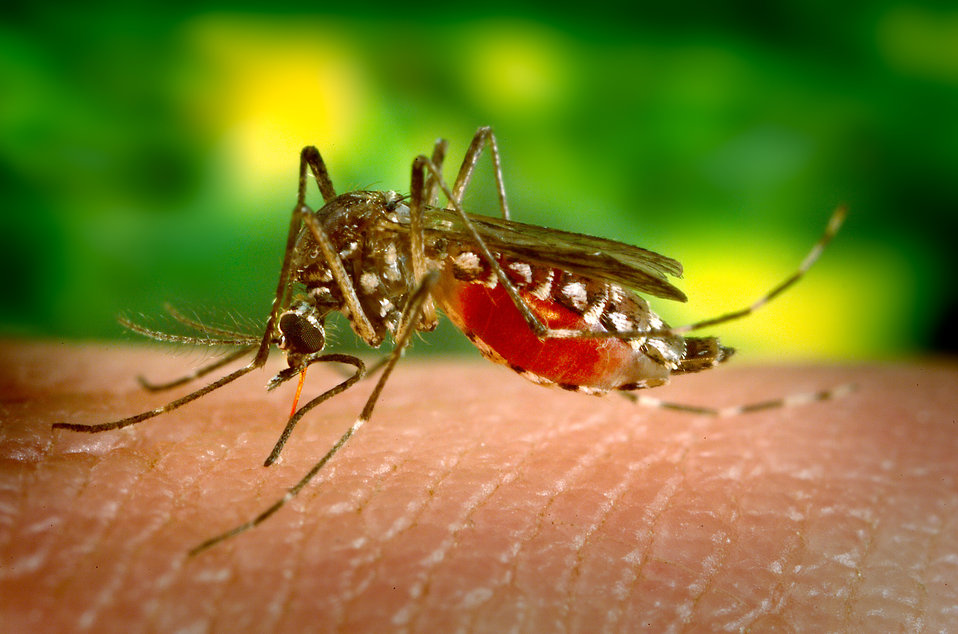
A mosquito biting skin

This 2005 photograph depicts a female Aedes aegypti mosquito, which is the primary vector for the spread of Dengue fever. The virus that causes Dengue is maintained in the mosquito's life cycle, and involves humans, to whom the virus is transmitted when bitten. The female mosquito pictured here, was shown as she was obtaining a blood meal by inserting the feeding stylet through the skin, and into a blood vessel. Blood can be seen being drawn up through the stylet, and into the mosquito's mouth.